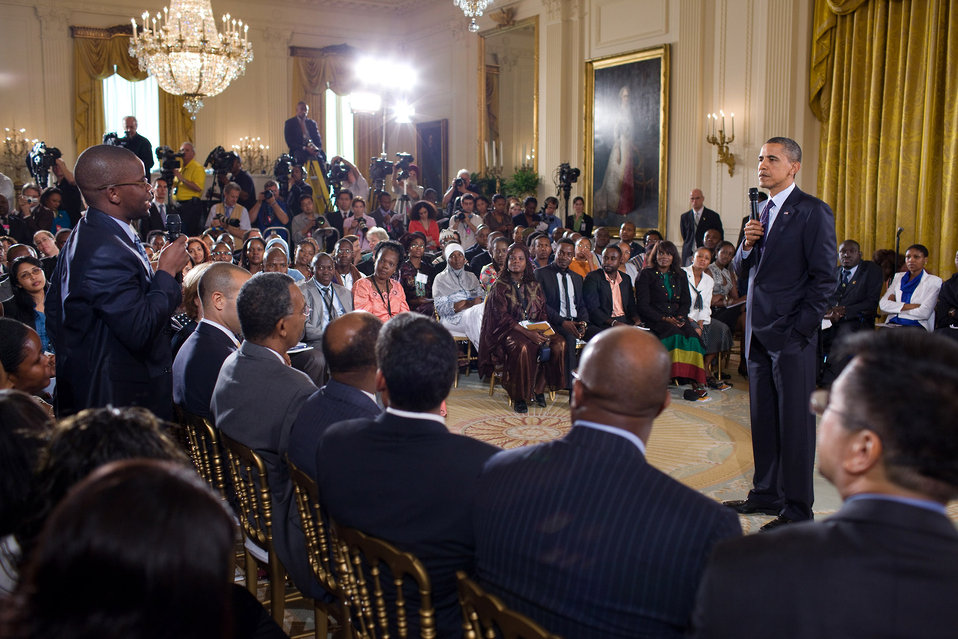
President Obama Listens to a Question from Sidney Chisi of Zimbabwe

President Barack Obama listens to a question from Sidney Chisi of Zimbabwe during a town hall-style meeting with young African leaders in the East Room of the White House in Washington, D.C., on August 3, 2010.